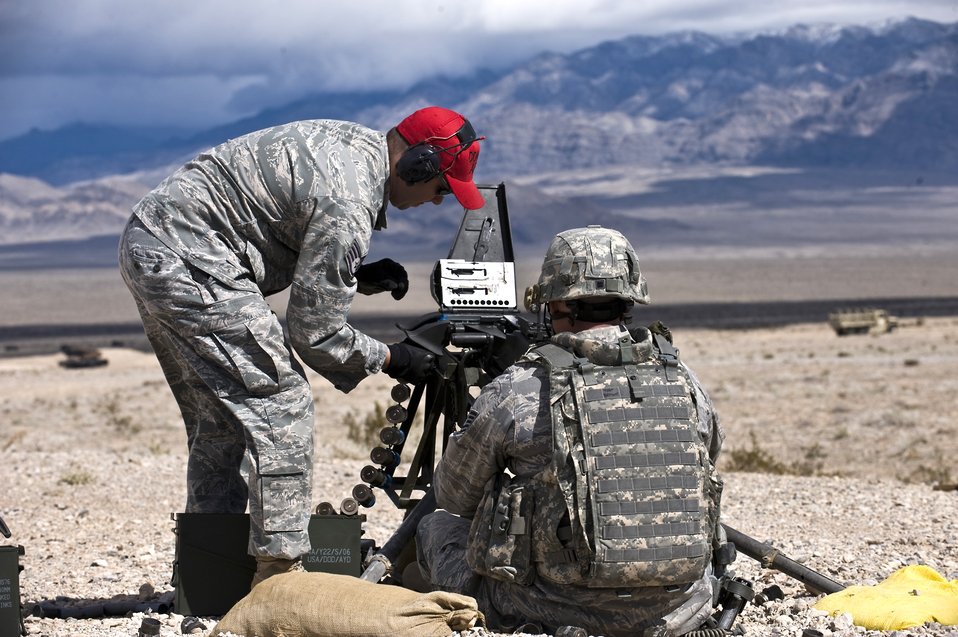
Ready to fire

Staff Sgt. Christopher McAleer (left) loads a grenade launcher for Tech. Sgt. Micah Boone March 7, 2011, during Desert Eagle on the Nevada Test and Training Range. Sergeant McAleer is a weapons instructor with the 99th Ground Combat Training Squadron. Sergeant Boone is with the 820th Base Defense Group.